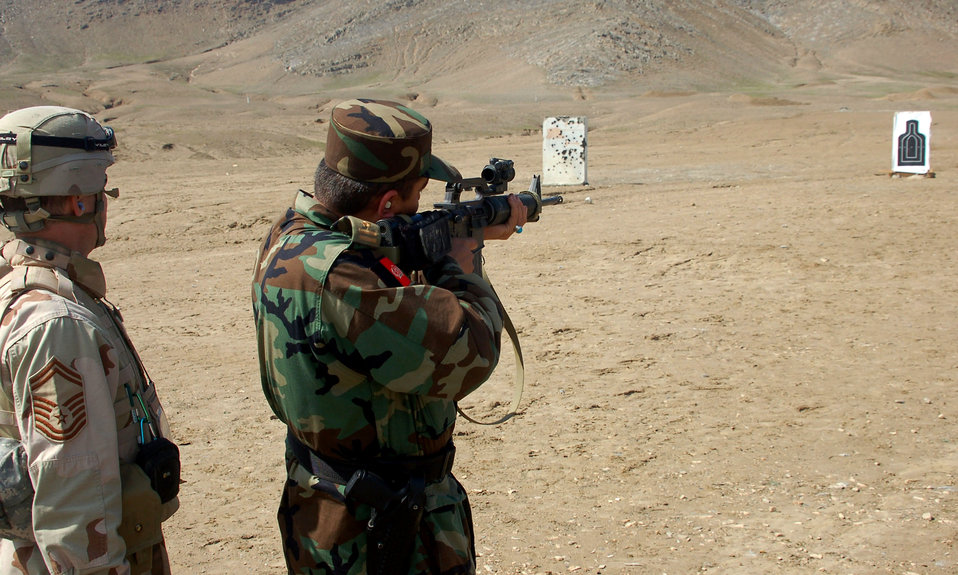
At home on the range

Senior Master Sgt. Robert Spaulding shows Afghan National Army Capt. Abdul Rahman the mechanics of an M-16 March 14 and how to view the target through the optical scope. Captain Rahman, 1st Company military police commander, shot all 30 rounds within the target. Sergeant Spaulding, the garrison sergeant major for the Training Assistance Group, is deployed from the 4th Logistics Readiness Squadron at Seymour-Johnson Air Force Base, N.C.